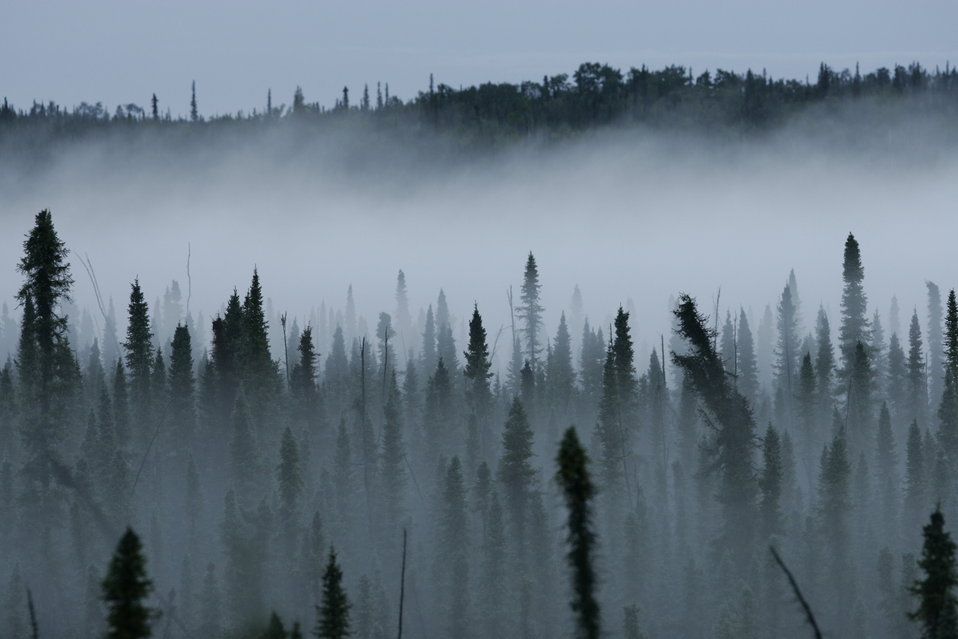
Misty Black Spruce Forest

A mist rises from a black spruce forest on Kenai National Wildlife Refuge. The black spruce burns explosively in forest fires. The fire can jump quickly from tree to tree.